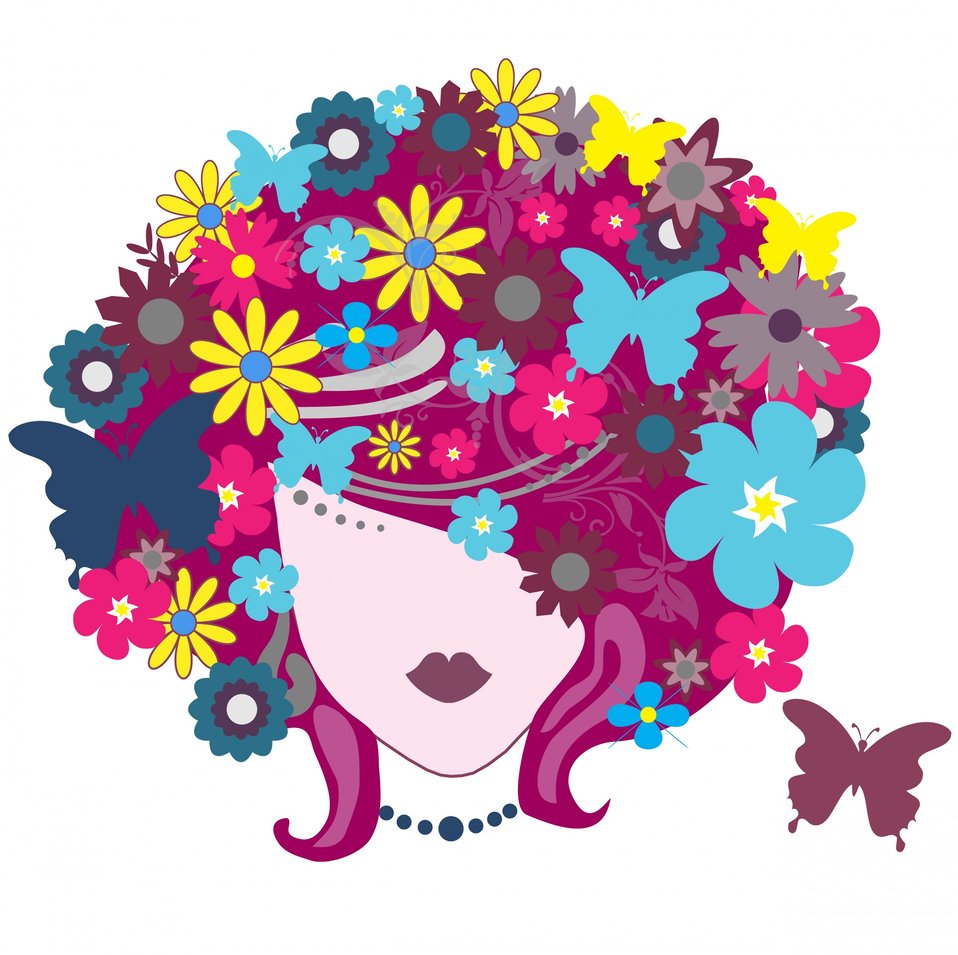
Gothic woman with flowers

Beautiful gothic woman with flowers and butterflies hair clipart.